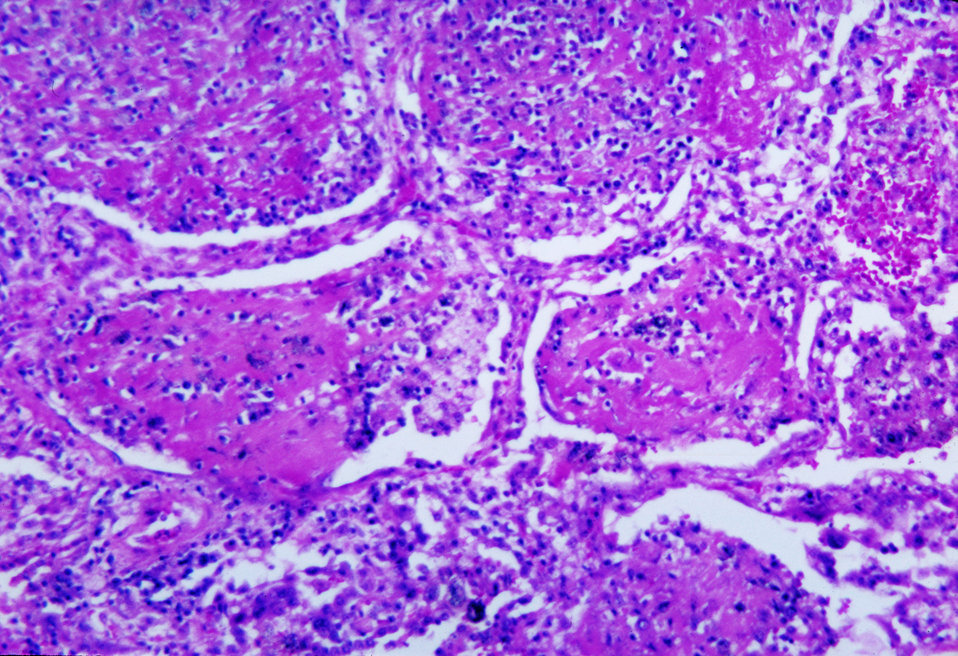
This micrograph depicts the histopathologic changes associated with histoplasmosis of the lung.